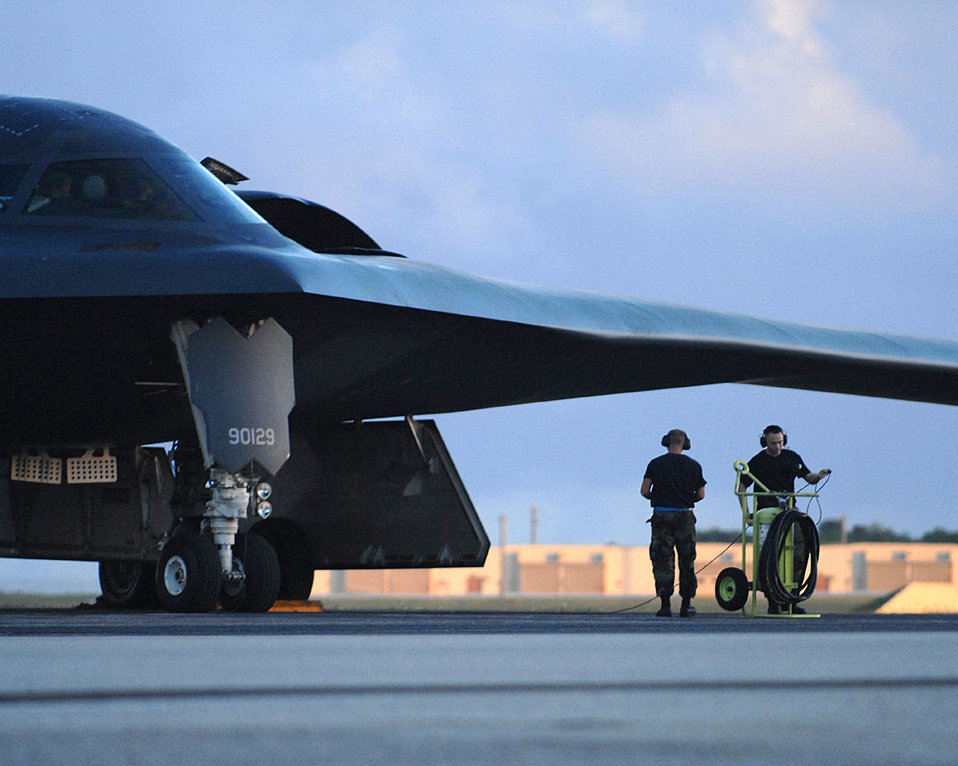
Spirit movers

Airmen prepare to taxi a B-2 Spirit Jan. 16 at Andersen Air Force Base, Guam. The B-2 is from Whiteman AFB, Mo.